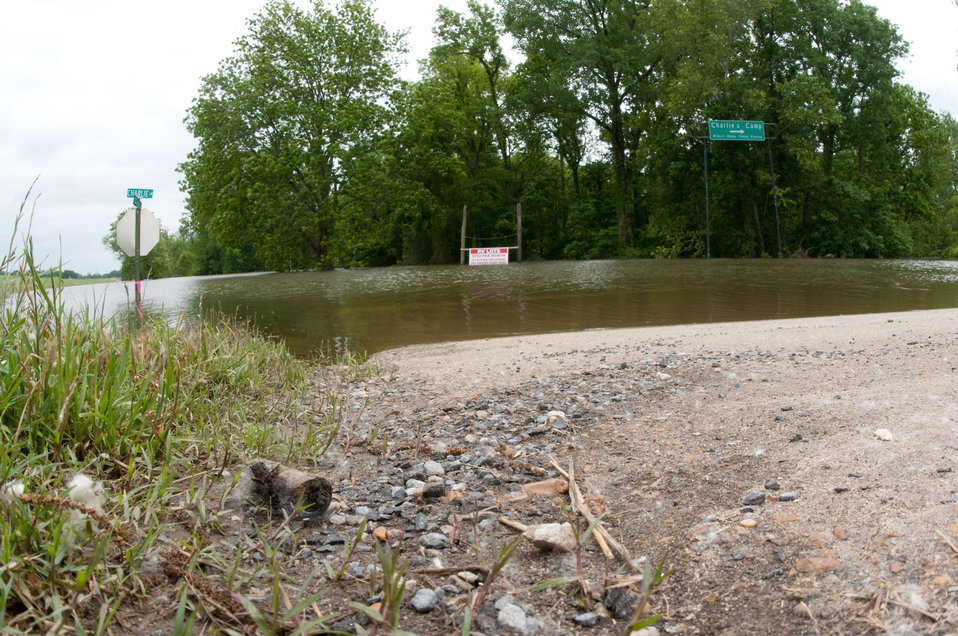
Floods waters from Mississippi River have begun to recede at Tunica Cutout, MS, on Sunday, May 15. 2011.